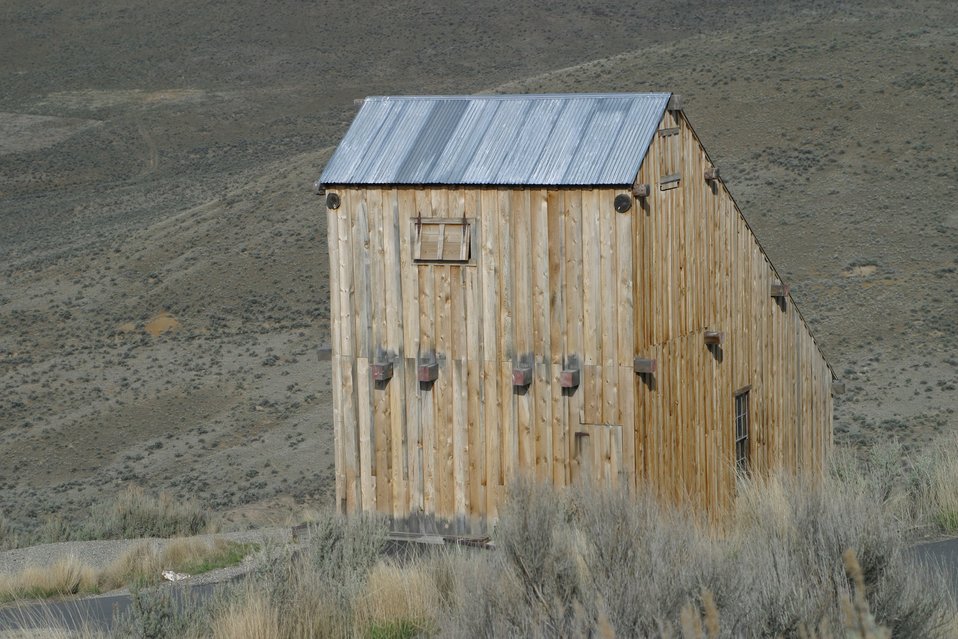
A replica of the Rabbit Mine 1926 stamp mill near Greenhorn in the Blue Mountains of eastern Oregon. It is used to interpret the importance of mining in western history, and the relationship of gold mining to the westward migration story.